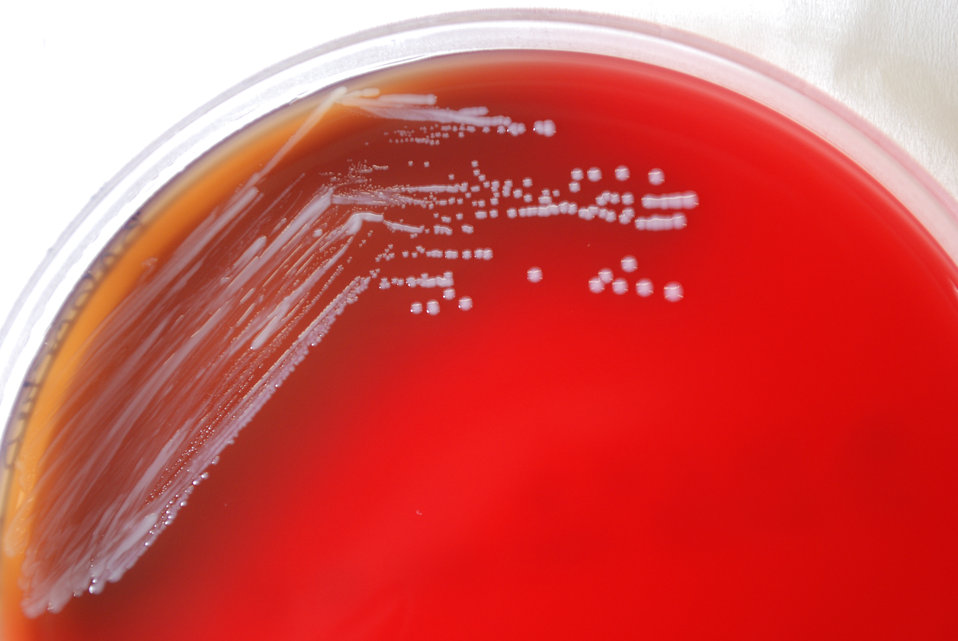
A closer view of PHIL 12284, this photograph depicts the colonial morphology displayed by Gram-negative Brucella abortus bacteria, which was grown on a medium of sheep's blood agar (SBA), for a 72 hour time period, at a temperature of 37�C. B. abortus bacteria are known to cause the disease brucellosis.